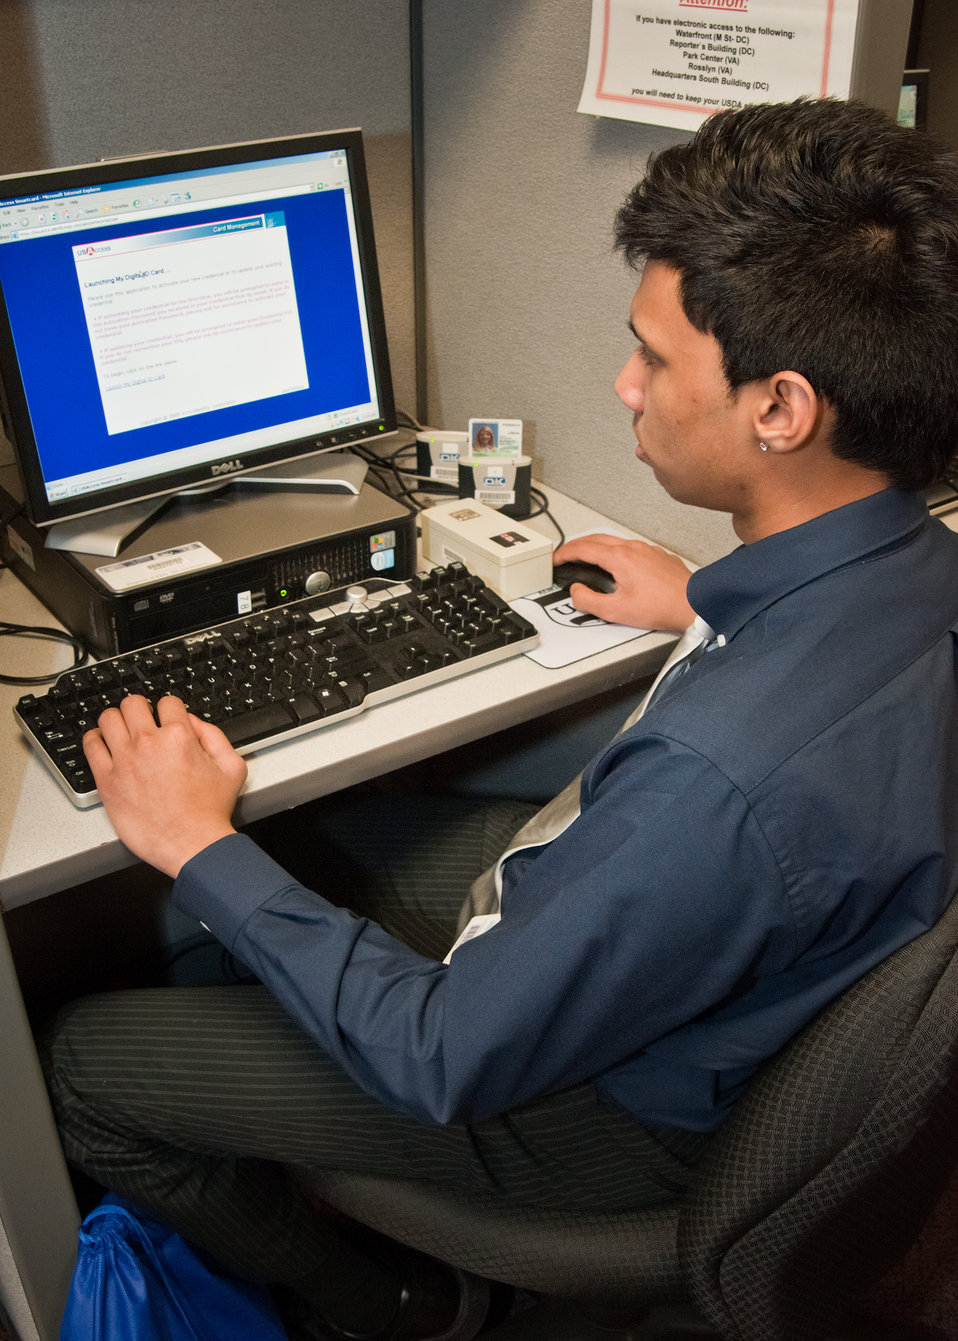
Anthony Rozario, Springbrook High School Academy of Information Technology in Silver Spring, Maryland reviews information about the enrollment process for a Smart Card identification card at the United States Department of Agriculture (USDA). Rozario and other students attended the USDA Information Technology Job Shadow Day Wednesday, April 13, 2011, an annual opportunity for students from local high schools to learn the breadth and depth of information technology at USDA and how it is applied the department. Students toured the Network Operations Center, the Badging Office and had a lecture on geospatial technology.